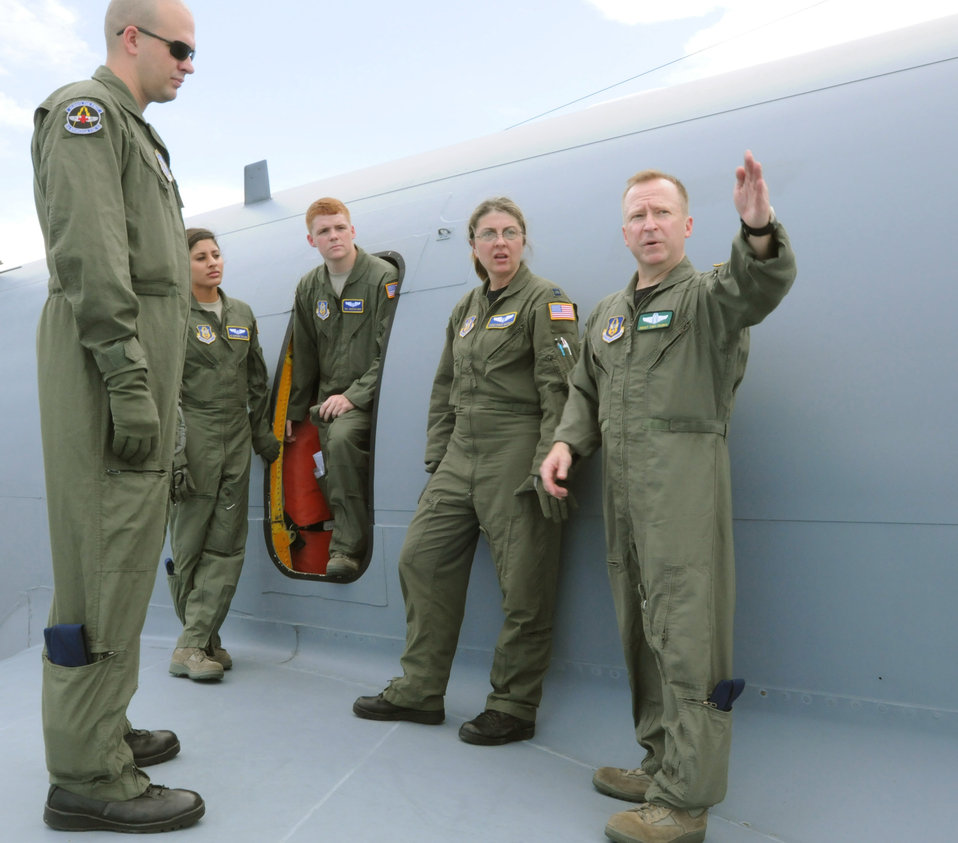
Total force aeromedical evacuation technicians gain unique training

Chief Master Sgt. Tony Parris shows Airmen from the 36th Aeromedical Evacuation Squadron and the 43rd AES how to safely exit a KC-135R Stratotanker in the event of an emergency landing June 26, 2010 at Melbourne, Fla. The 459th AES also participated in the blended training by providing hands-on instruction on patient support pallet operations. Chief Parris is a boom operator assigned to the 77th Air Refueling Squadron.